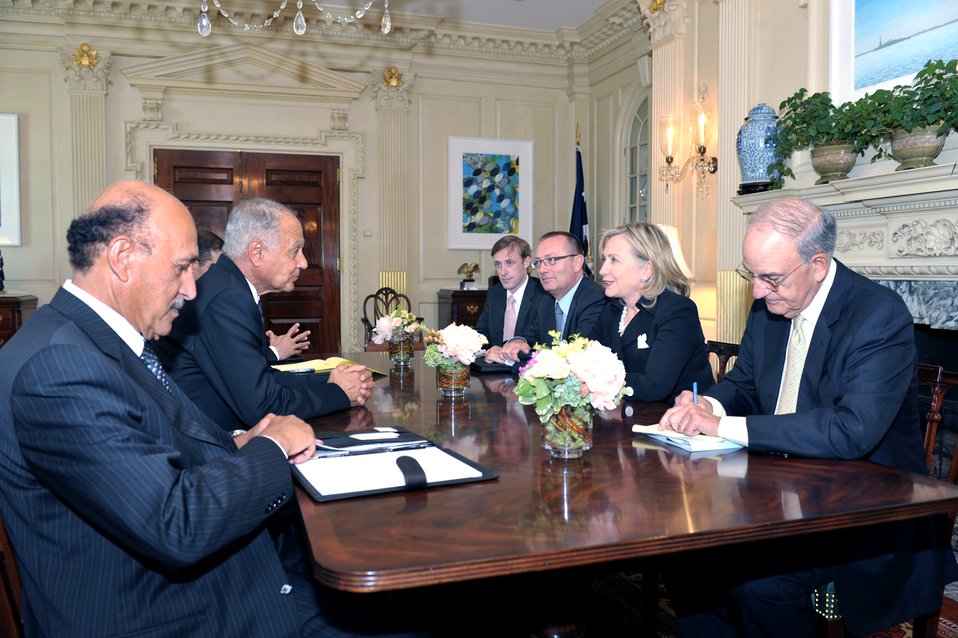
Secretary Clinton Holds a Bilateral Meeting With Egyptian Foreign Minister Gheit

U.S. Secretary of State Hillary Rodham Clinton holds a bilateral meeting with Egyptian Foreign Minister Ahmed Aboul Gheit at the U.S. Department of State in Washington, D.C., on August 31, 2010.